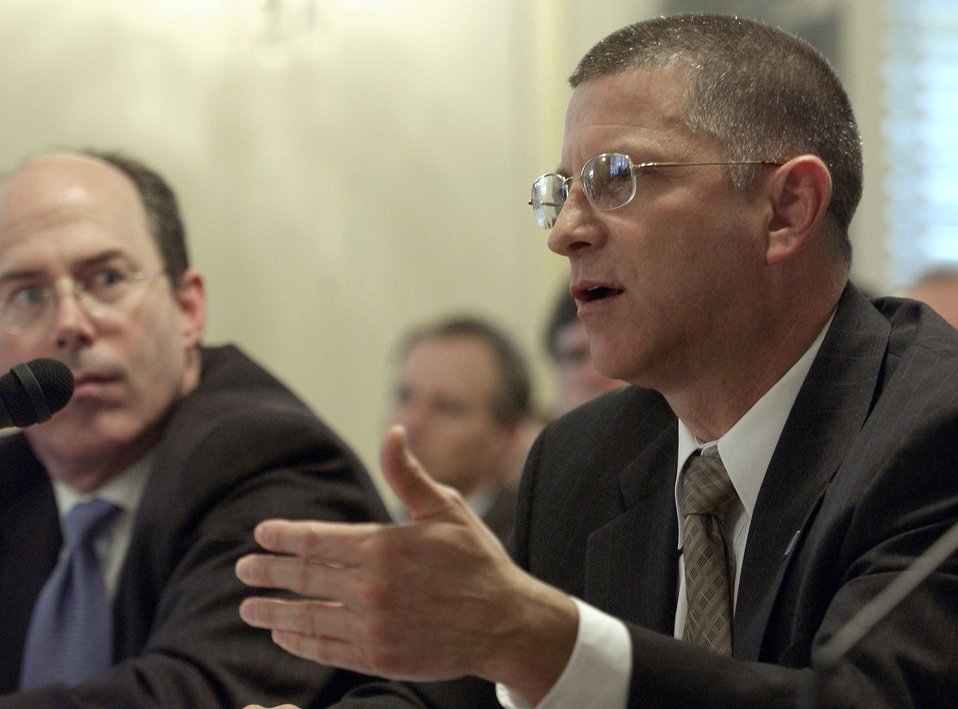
Dominguez: Unethical behavior an affront to all hardworking Airmen

WASHINGTON -- Department of Defense Inspector General Joseph Schmitz (left) looks on as Michael L. Dominguez, acting secretary of the Air Force, answers questions during a hearing of the Senate Armed Services Committee subcommitee on airland April 14. The subcommittee heard testimony on Air Force acquisition oversight.